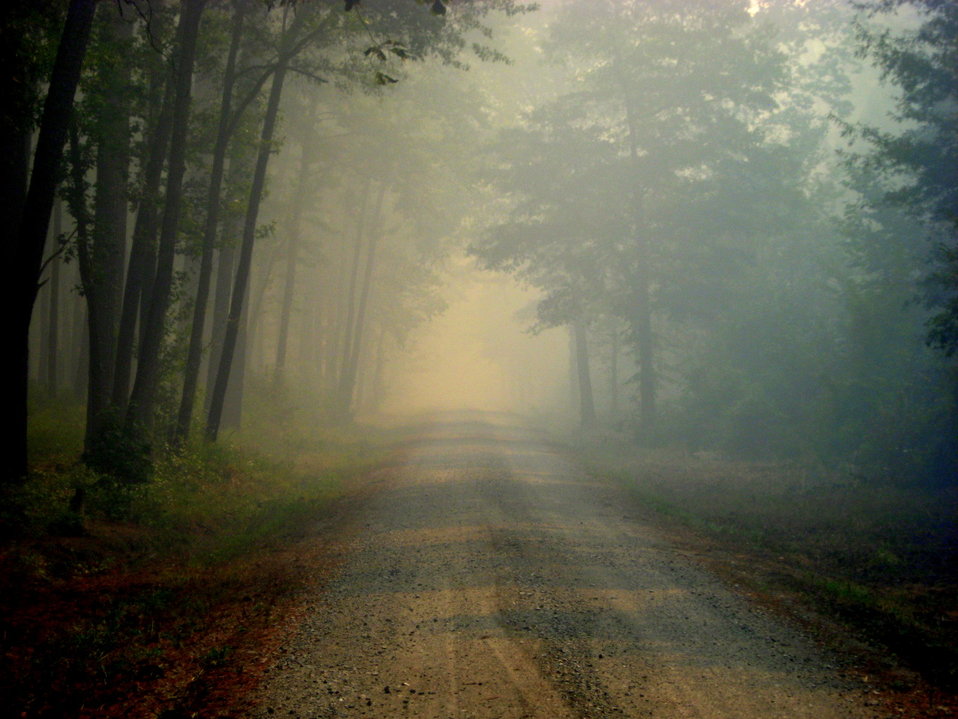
Smoky entrance

Suffolk, VA, August 2011: Smoke from the Lateral West Fire clouds the entrance to Railroad Ditch at Great Dismal Swamp National Wildlife Refuge. Smoke generated from fire burning deep in peat soils plagued downwind areas for weeks.